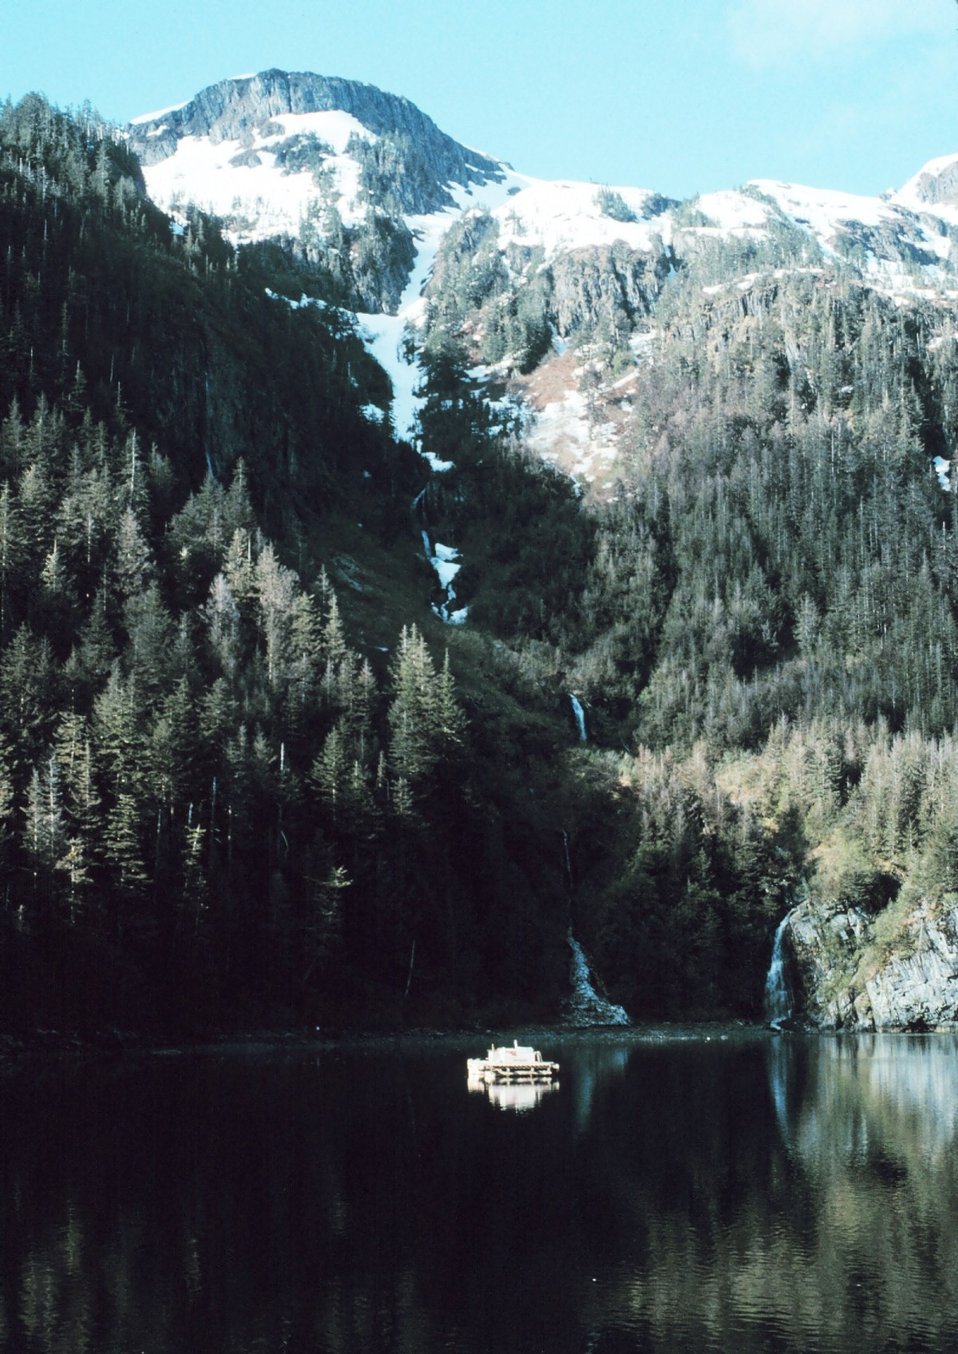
Prince William Sound